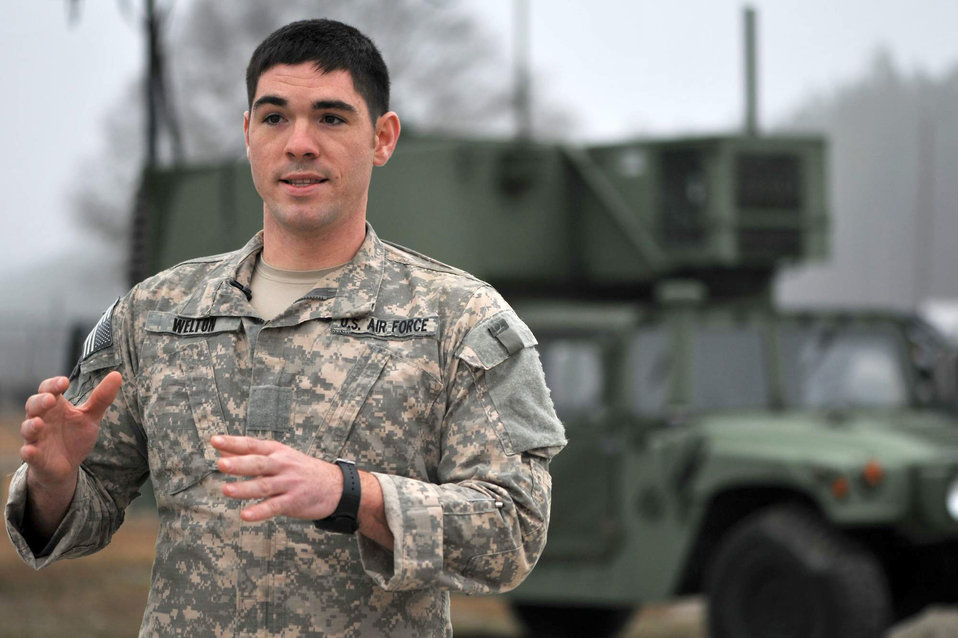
TACP Airmen hone skills

Staff Sgt. Cory Welton explains his duties as a joint terminal attack controller Feb. 1, 2011, during a National Guard Bureau joint quarterly training exercise at Camp Townsend, Ga. Sergeant Welton is based out of Camp Murray, Wash.